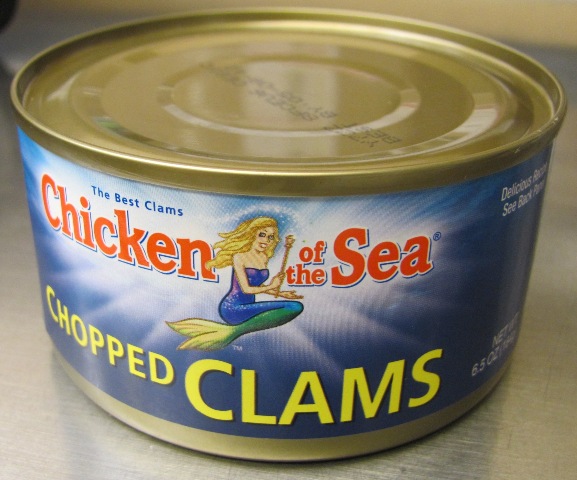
RECALLED – Chopped Clams

April 7, 2011 – Product Recall – Tri-Union Seafoods Issues Precautionary, Voluntary Recall Of Limited 6.5-Ounce Chopped Clams.